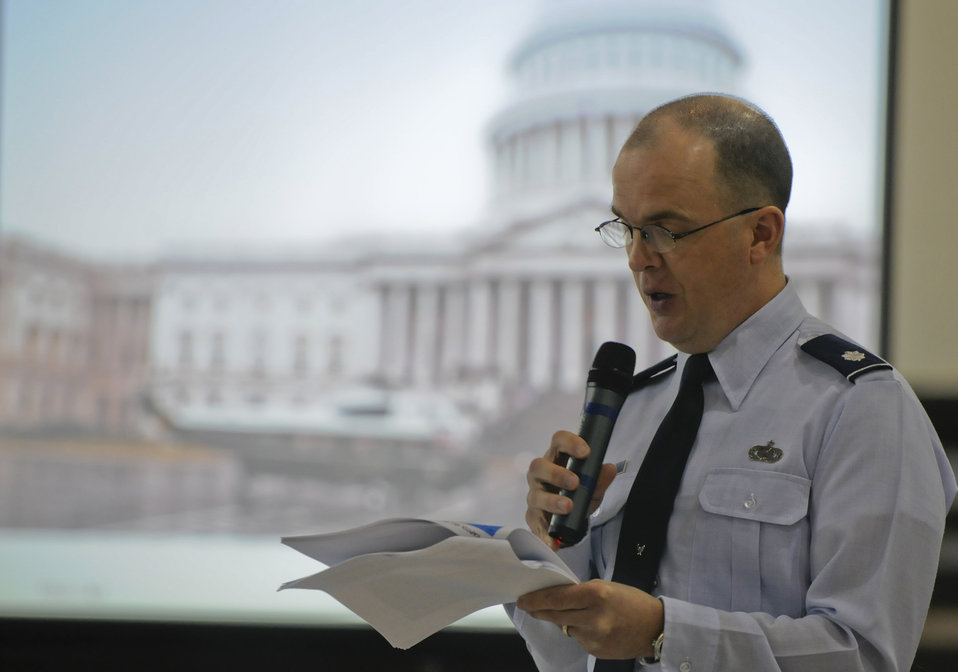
DOD inaugural committee moves into high gear

Lt. Col. William Braden gives a briefing during a large scale map exercise Nov. 6 at Fort Lesley J. McNair, Washington, D.C. The map exercise will designate all participant locations for the 56th Inaugural Day period in January 2009. Colonel Braden is on the Armed Forces Inaugural Committee.